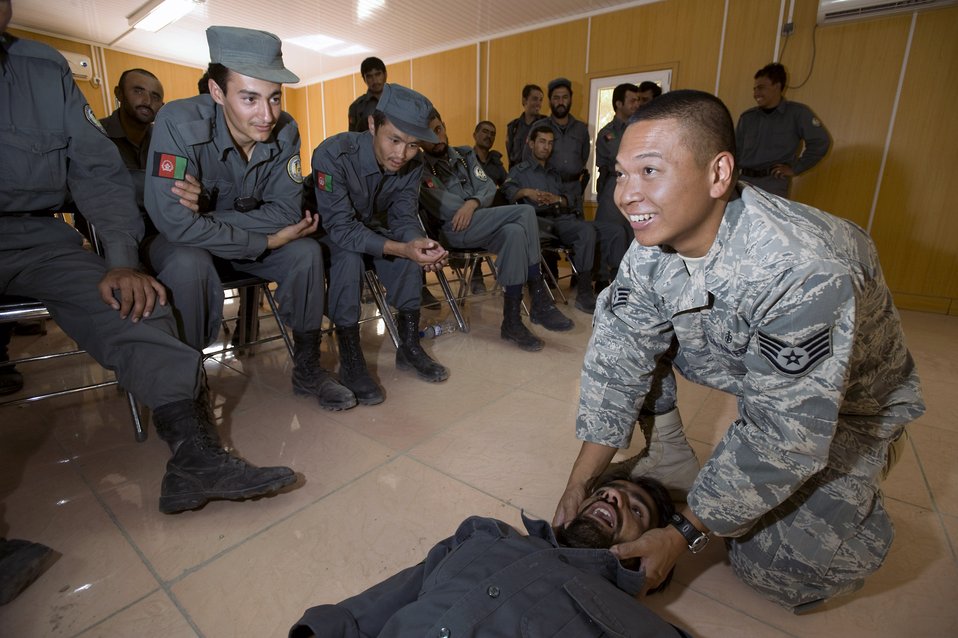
How to save a life

Staff Sgt. Nestor Albanos shows Afghan national police members how to open an airway during a Combat Life Savers course Aug. 12 at Qalat, Afghanistan. Sergeant Albanos is an Air Force medical technician assigned to the Zabul Provincial Reconstruction Team and teaches the ANP and other Afghan forces lifesaving skills at the PRT compound.